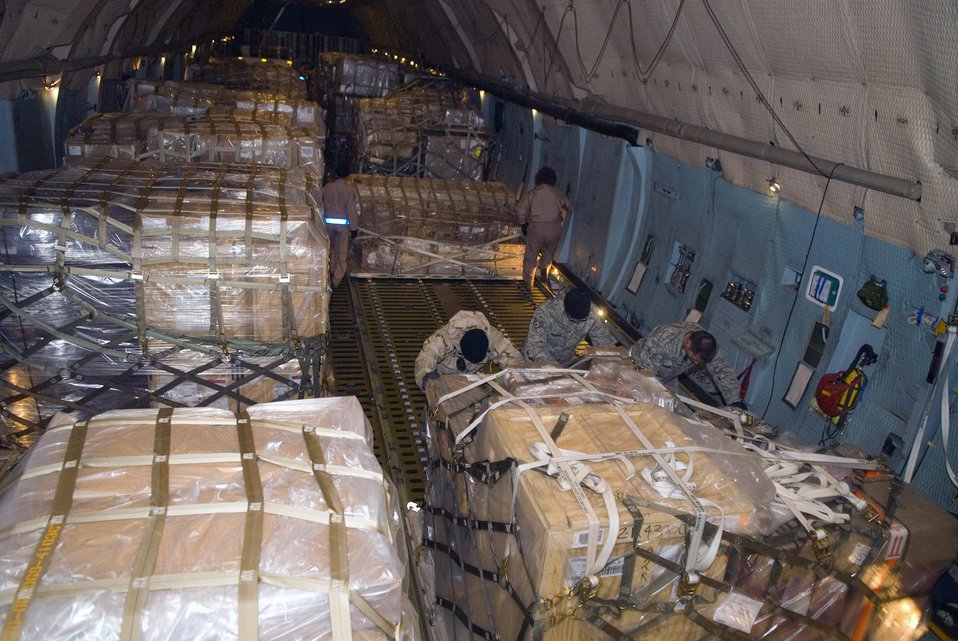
Galaxy quest

Air transportation specialists from the 332nd Expeditionary Logistics Readiness Squadron download cargo from a C-5 Galaxy Jan. 7 at Balad Air Base, Iraq. The C-5 can carry up to 36 standard pallets and 81 troops simultaneously.